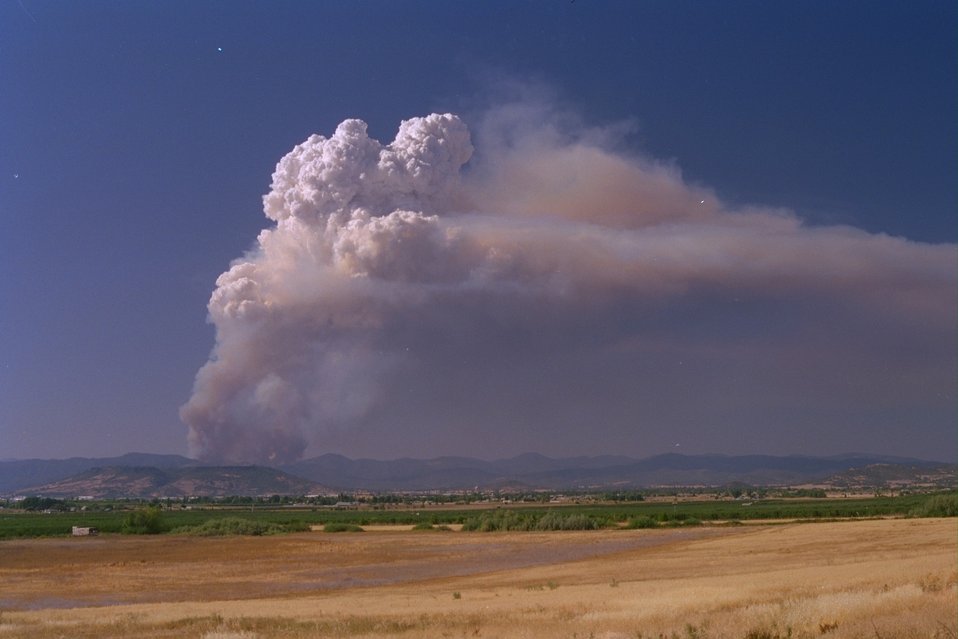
Hull Mountain Fire, column as seen from Foothill Road, Medford, approximately two hours after ignition, at 5pm.